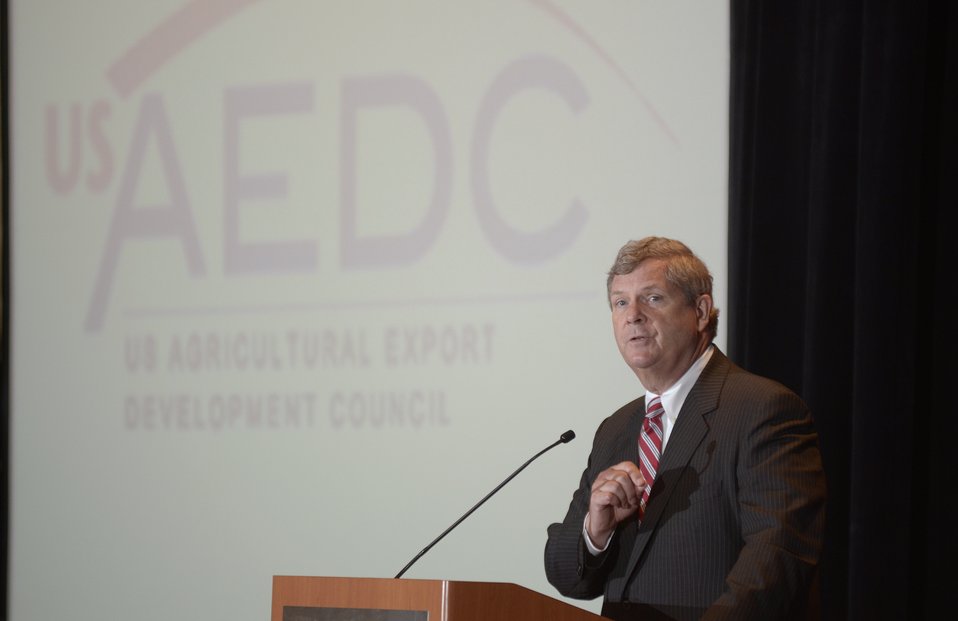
Agriculture Secretary Tom Vilsack presents keynote remarks at the U.S. Agricultural Export Development Council (USAEDC) Attaché Seminar, at the Westin Alexandria, in Alexandria, VA, on Wednesday, July 10, 2013. USAEDC is a non-profit private sector trade association that provides an exchange and coordination of information to promote the export of the products of U.S. agriculture. Their membership includes U.S. commodity trade associations, farmer cooperatives and state regional trade groups from around the country. In the interest of U.S. agricultural growers and producers their export promotion efforts, work in conjunction with the U.S. Department of Agriculture Foreign Agricultural Service.